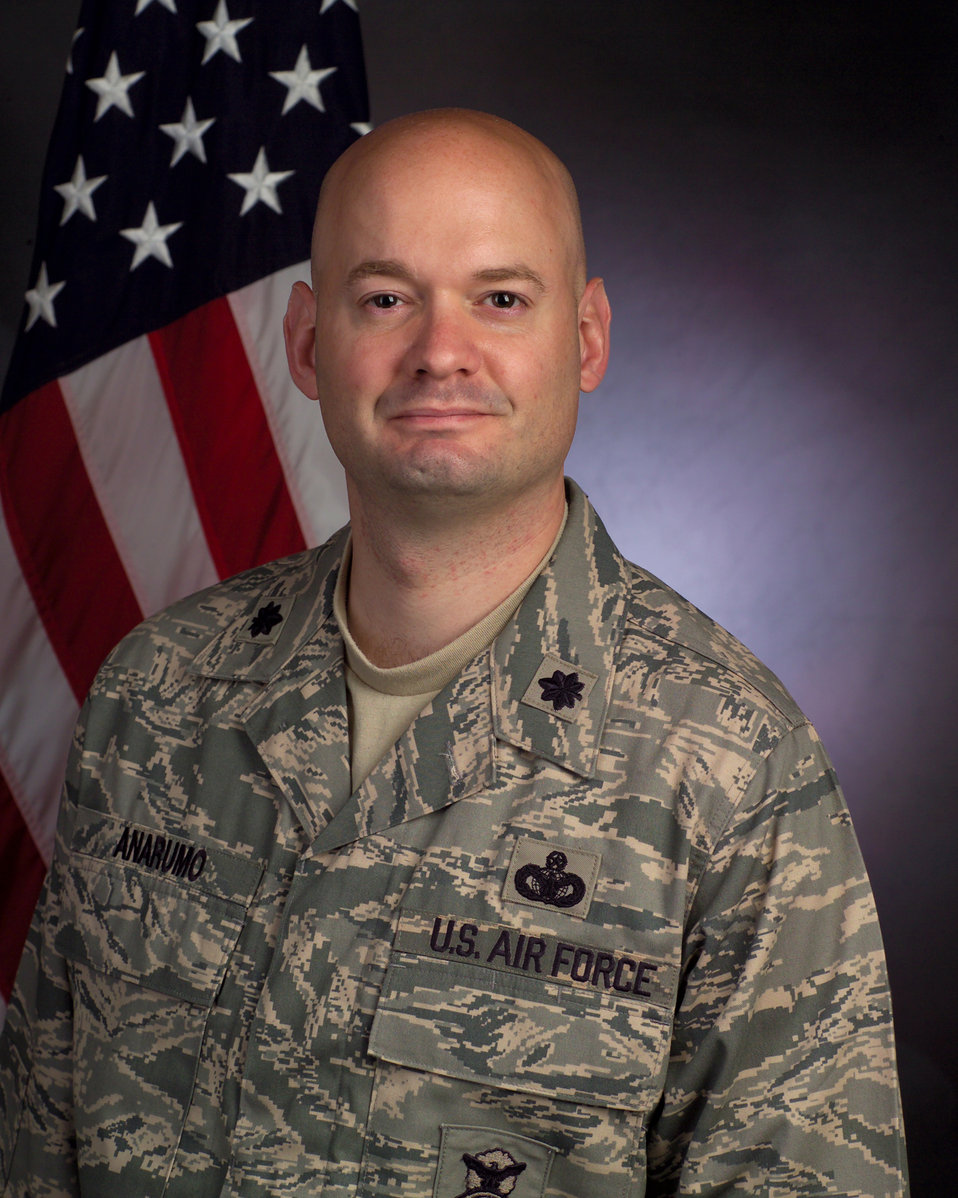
Wanted: Sergeants

Lt. Col. Mark Anarumo